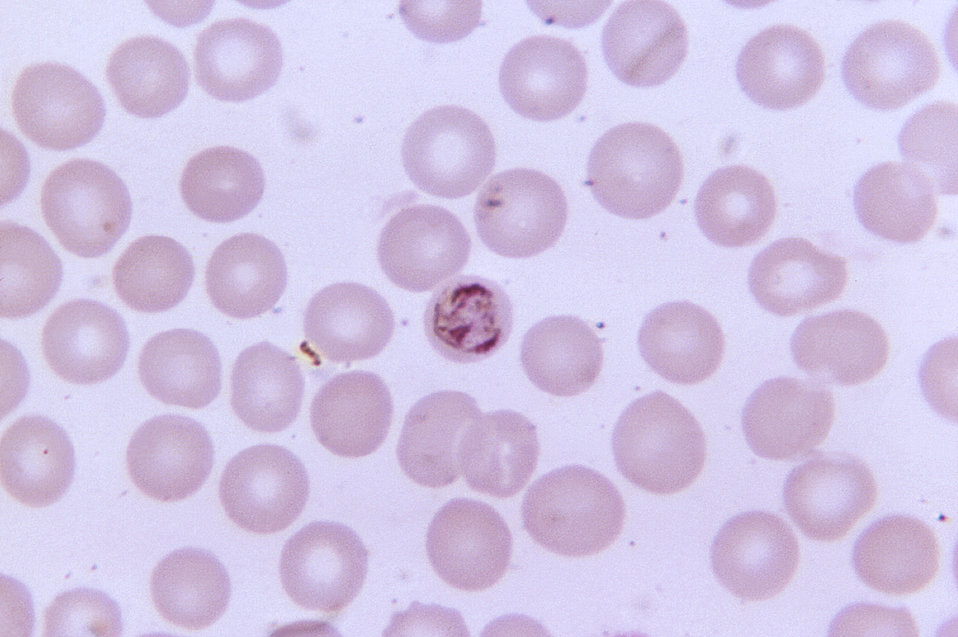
This thin film blood smear micrograph depicts an immature Plasmodium malariae schizont, which contains three chromatin masses, a light cytoplasm, and a dark pigment.